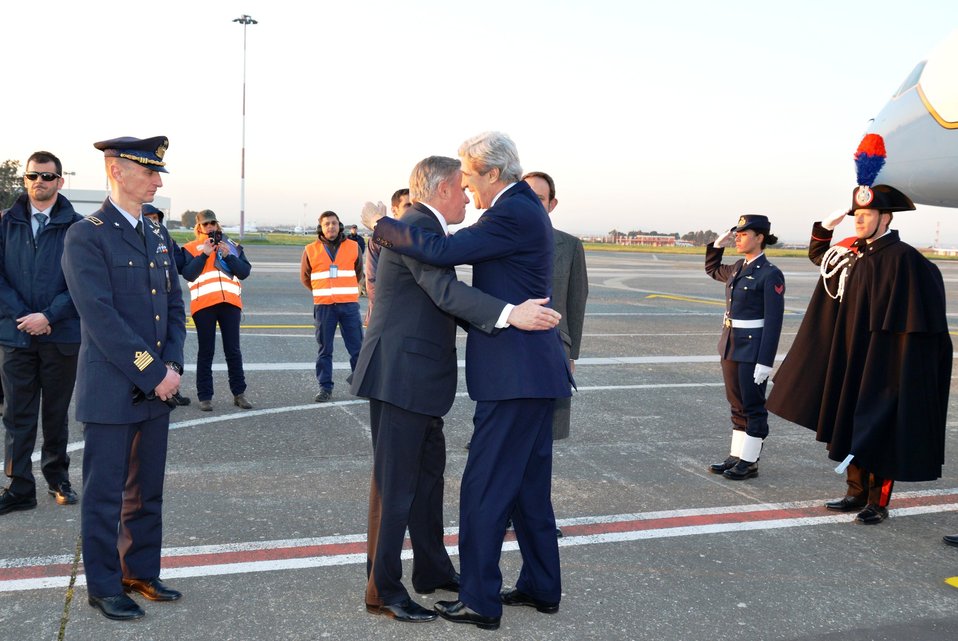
Secretary Kerry Is Greeted By Ambassador Thorne

U.S. Secretary of State John Kerry is greeted by his former brother-in-law and now U.S. Ambassador to Italy David Thorne on the tarmac upon landing at Ciampino Airport outside of Rome, Italy, on February 27, 2013.